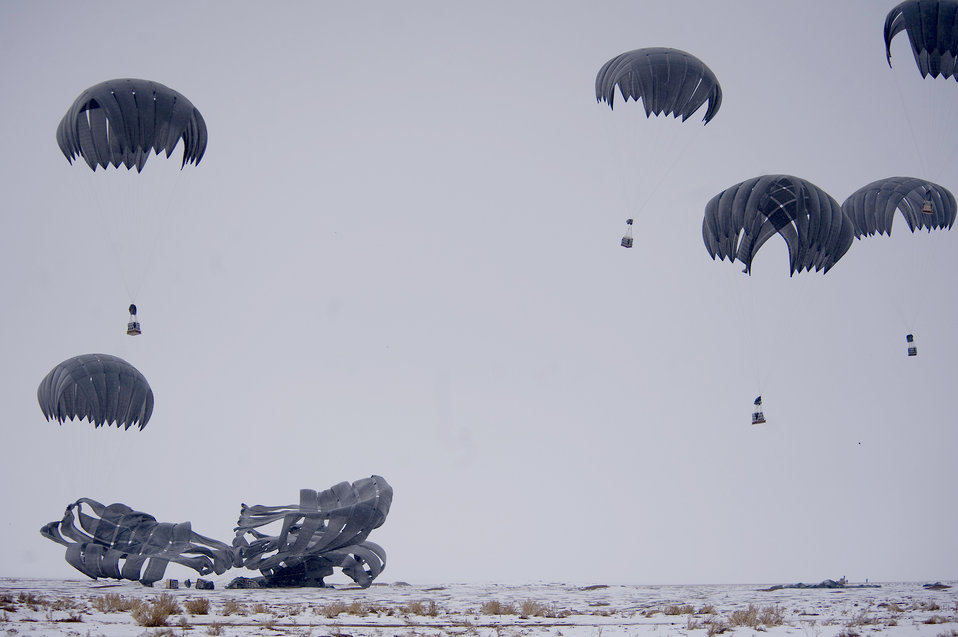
C-17s deliver largest OEF fuel resupply

Bundles of fuel are air delivered recently to Forward Operating Base Waza K'wah in the Paktika province of Afghanistan. The fuel was part of a C-17 Globemaster III air delivery to help sustain members of Task Force Currahee, 4th Brigade, 101st Airborne Division, whose only means of re-supply is through air delivery.